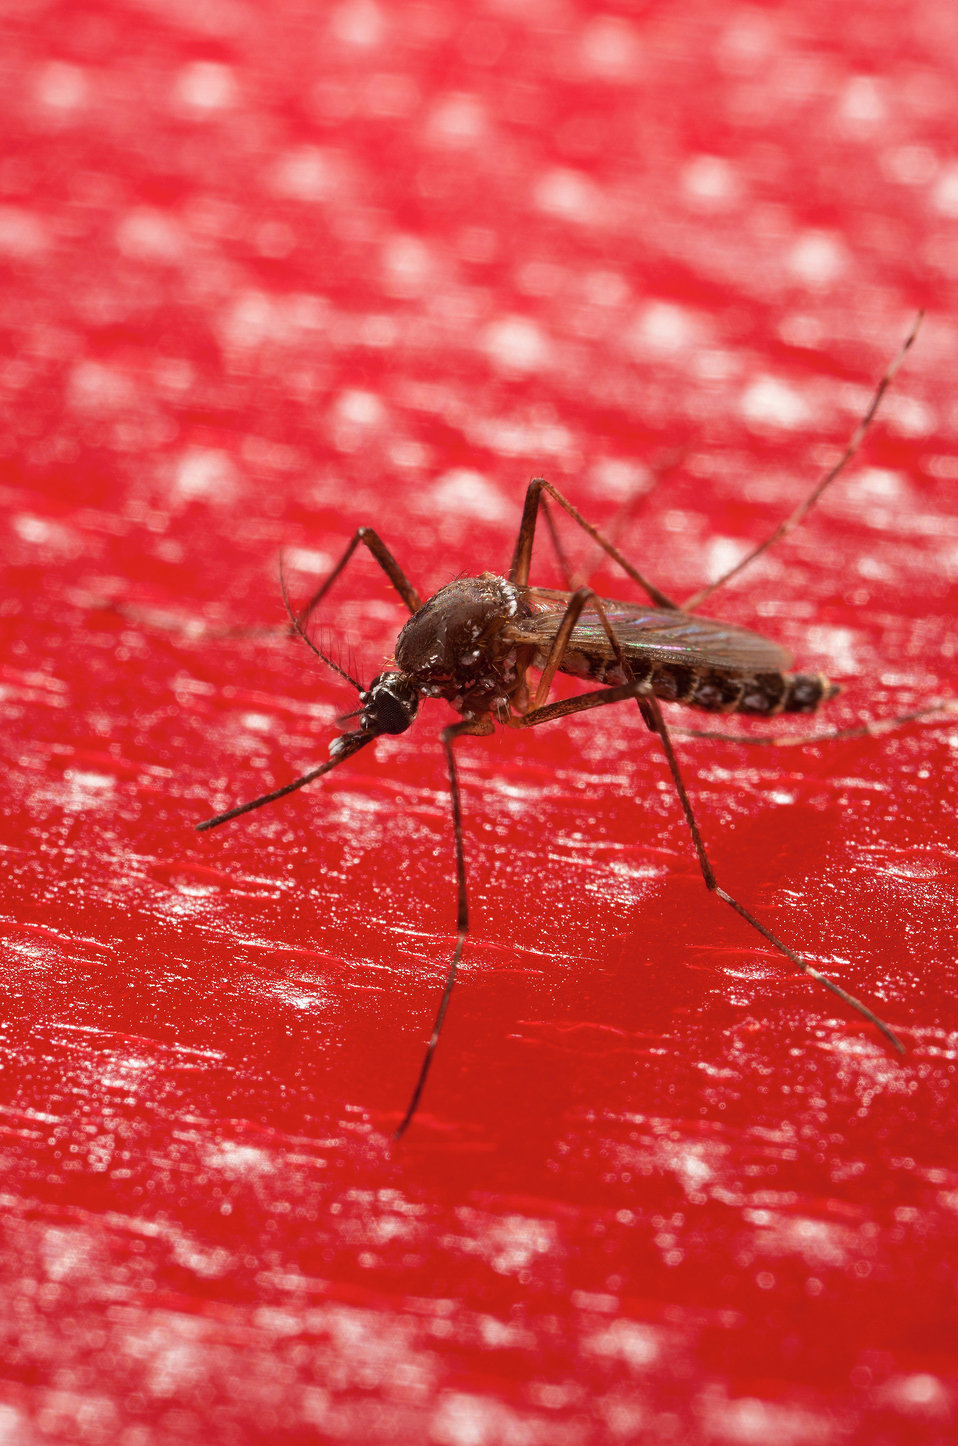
The U.S. Department of Agriculture's (USDA) Agricultural Research Service (ARS) tests natural compounds found in breadfruit flowers on a female Aedes aegypti mosquito as it feeds on an artificial membrane loaded with a blood substitute. Tests have shown that these natural compounds are highly effective at repelling biting bugs.